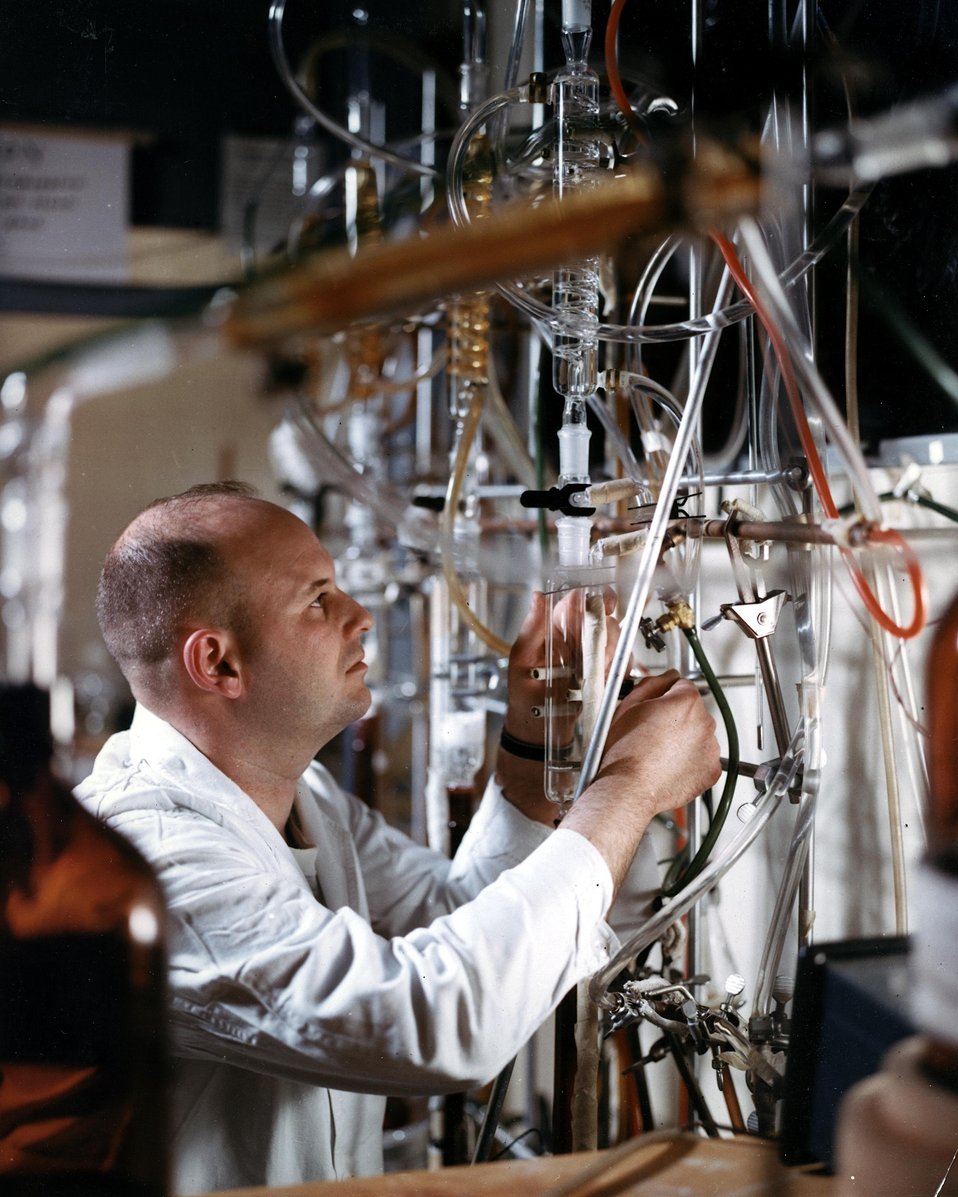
Chromatography is one of the many steps in the purification process. A volatile liquid
is boiled in a lower flask and the vapor condensed above the material being purified.